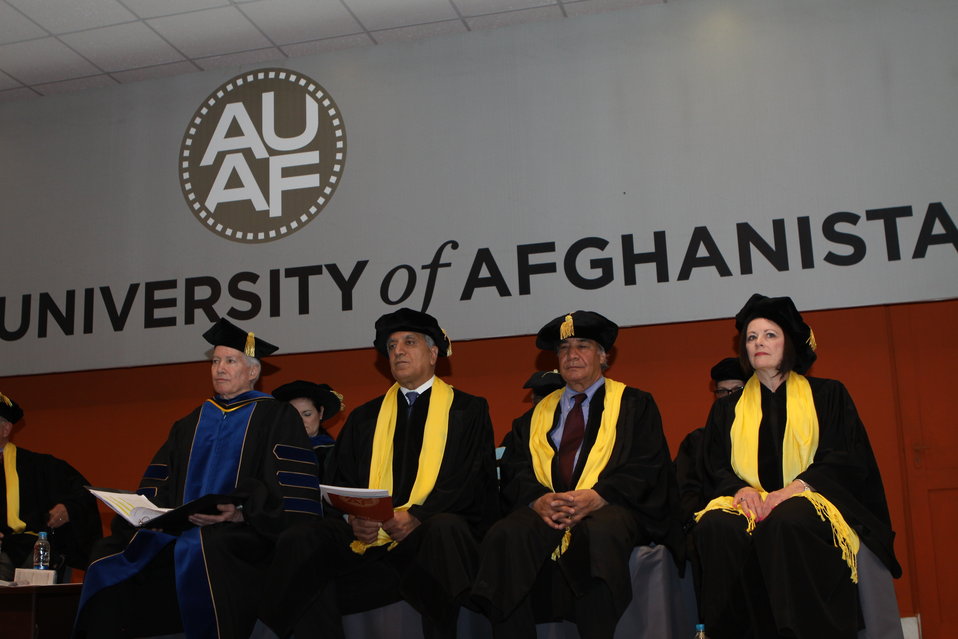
100526 AUAF Graduation 139